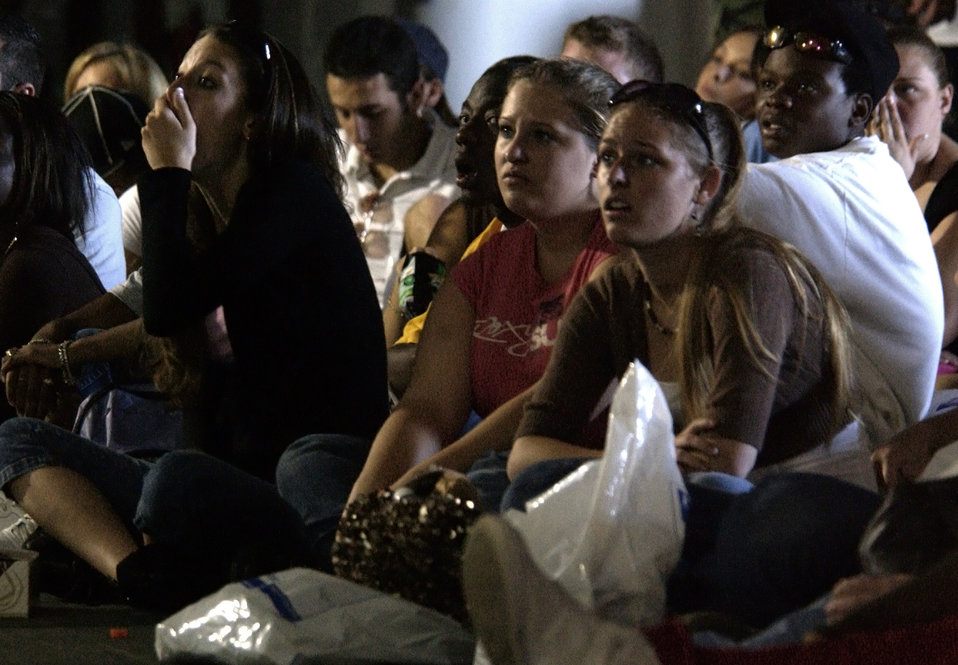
'Not on Our Watch'

Students react to graphic images of vehicle accidents during a slide presentation on Tuesday, April 11, 2006 at Patrick Air Force Base, Fla. The presentation was part of Operation NOW -- Not on Our Watch -- designed to shock students into safer driving.